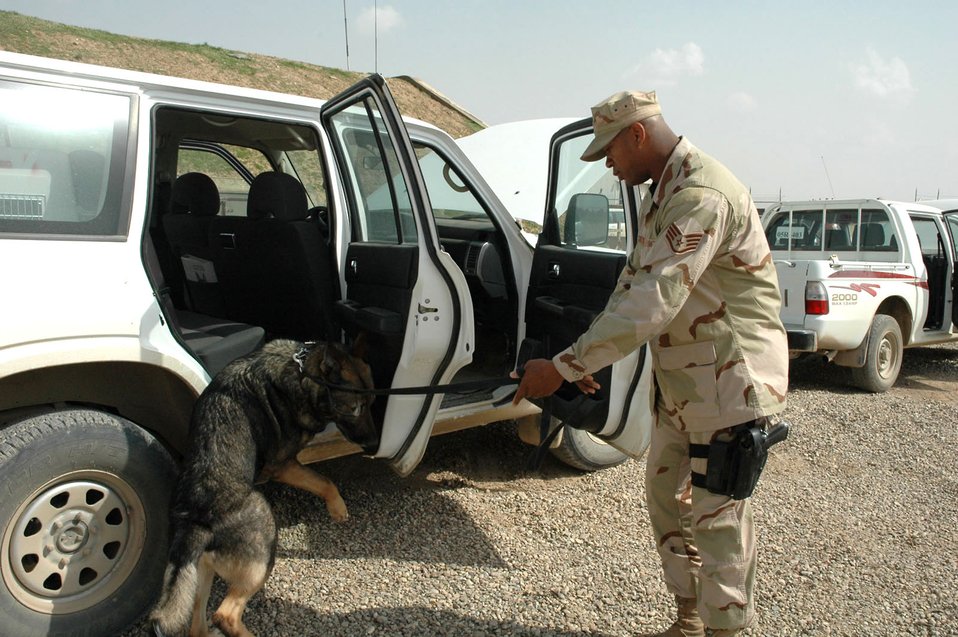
The nose knows

Staff Sgt. Ethan McCants puts Edo through a search exercise at Kirkuk Air Base, Iraq. His reward for a job well done is his favorite ball. Sergeant McCants and military working dog Edo are assigned to the 506th Expeditionary Security Forces Squadron here.